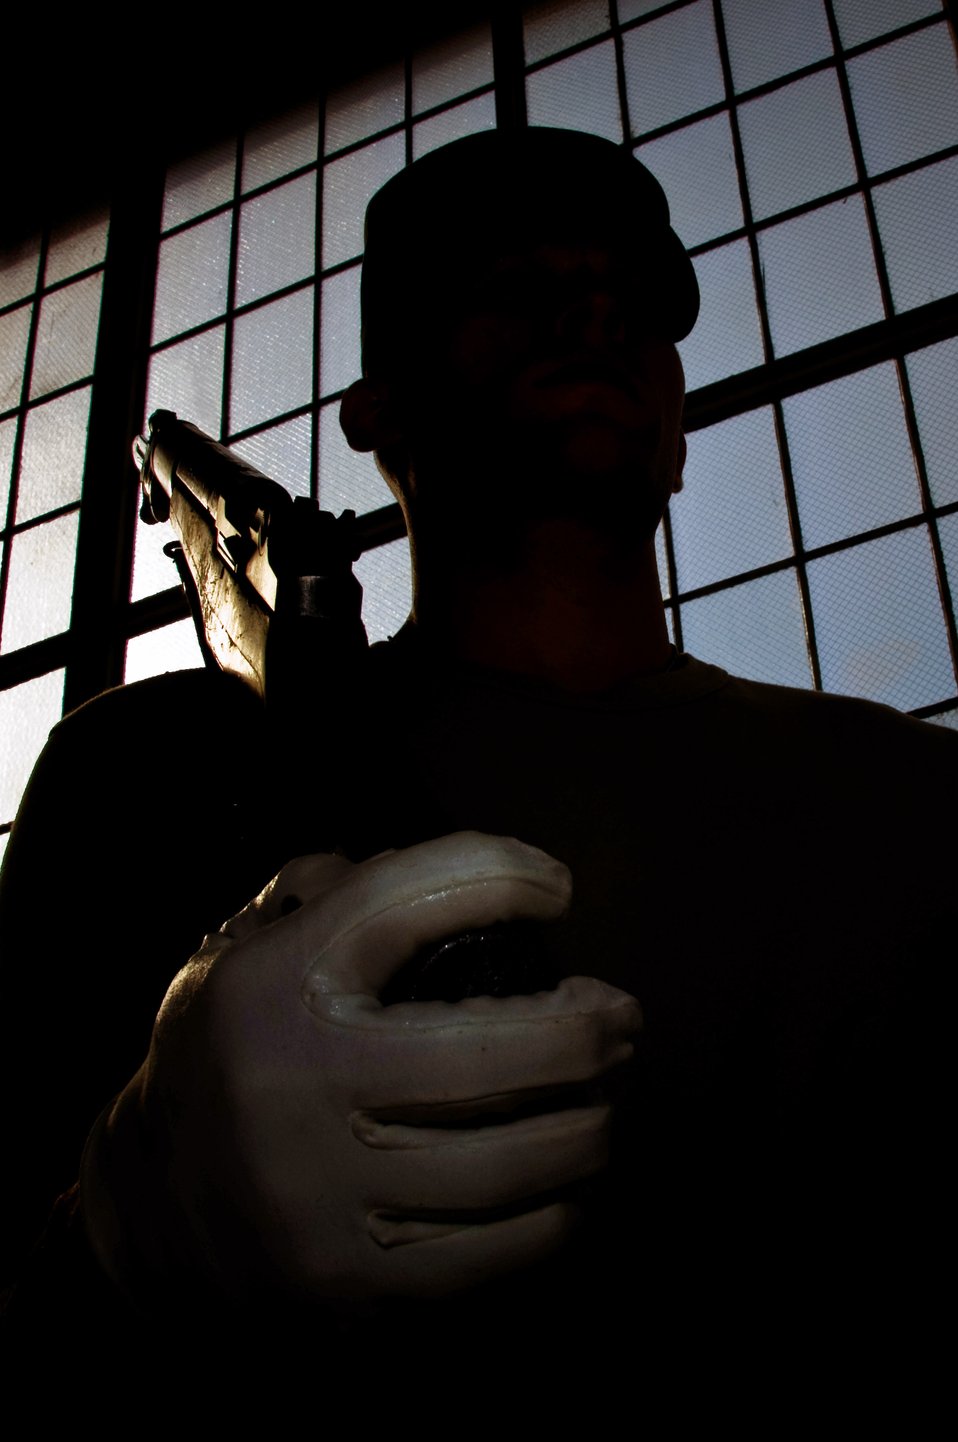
Honor Guard holds annual training camp at Maxwell AFB

An Air Force Honor Guard Drill Team member stands perfectly at right-shoulder with his M-1 garand rifle Jan. 24. This year, Air Force officials moved the drill team's annual training camp to Maxwell Air Force Base, Ala. The team has been training to perfect their demonstration in preparation for their 2008 tour season.